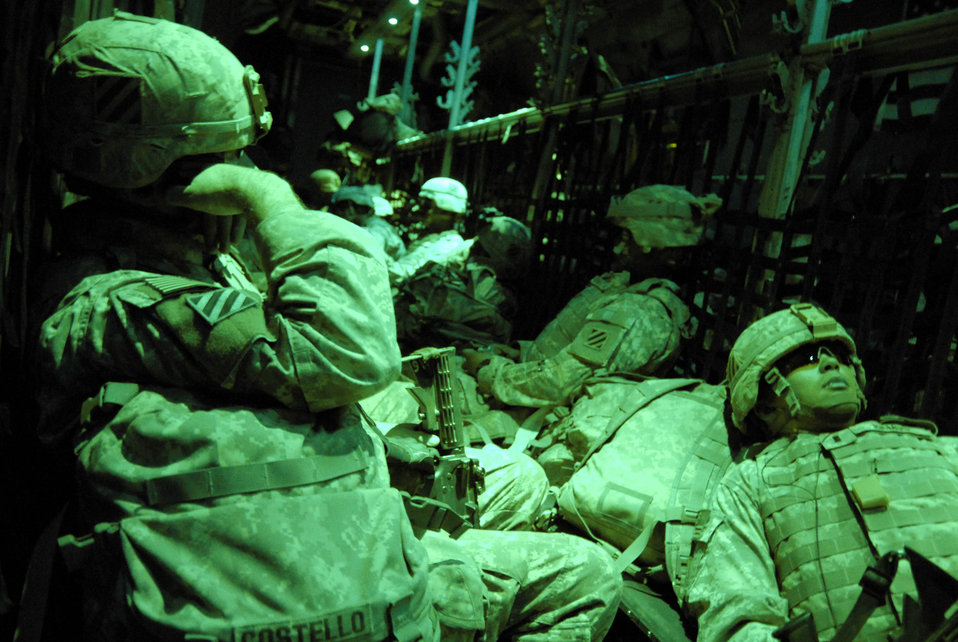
Special delivery

Army 1st Lt. John Costello (front left) and 1st Lt. Ruben Ramos (front right) take a power nap in the back of a C-130 Hercules May 13 after departing an air base in Iraq. The Soldiers are returning home from a 14-month deployment in Iraq and are deployed from the A Battery, 1-10 Field Artillery, 3rd Brigade Combat Team, 31st Division out of Fort Benning, Ga.